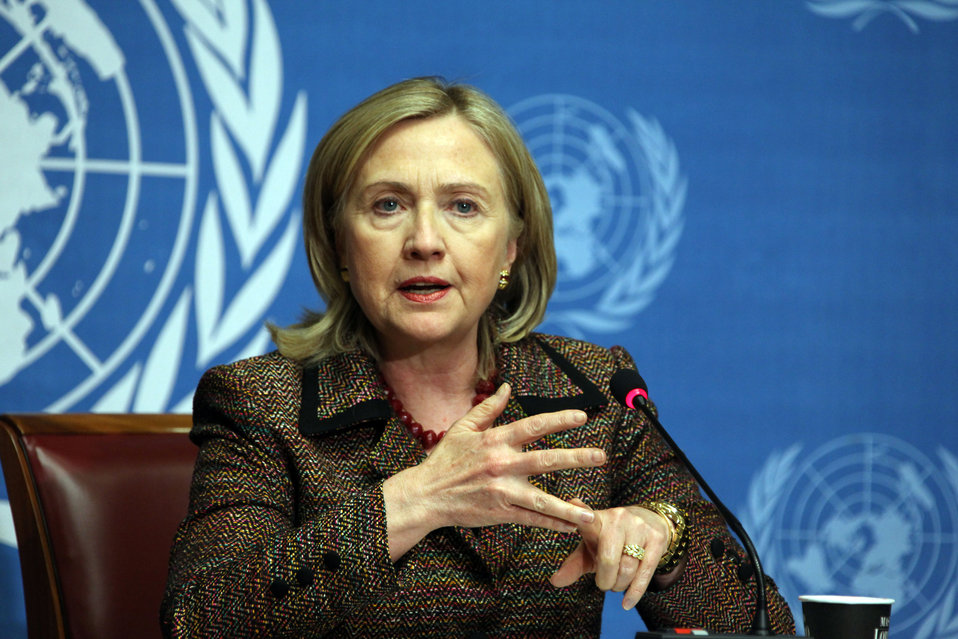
Secretary Clinton Speaks at a Press Conference

U.S. Secretary of State Hillary Rodham Clinton speaks at a press conference at the United Nations Office at Geneva, Switzerland, on February 28, 2011. The Secretary took questions from the press after addressing the Human Rights Council and the Conference on Disarmament.